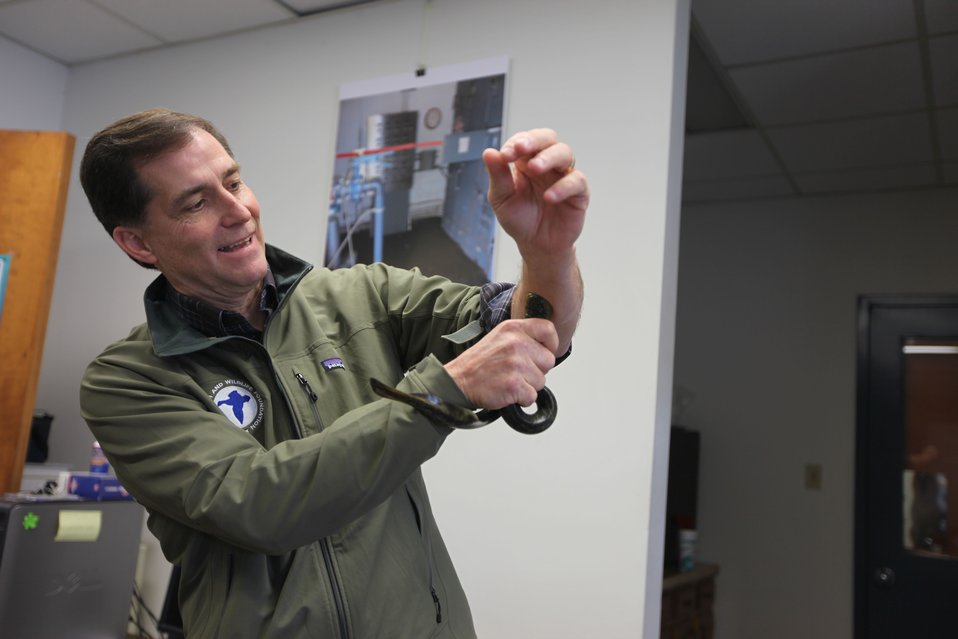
Service Director Dan Ashe with a lamprey attached to his arm!

U.S. Fish & Wildlife Service Director Dan Ashe visits the Northeast Region
for a tour of the White River National Fish Hatchery in Bethel, Vermont on
April 27, 2012. The hatchery was devastated by Tropical Storm Irene and
Dan Ashe had the chance to meet and thank the staff for their heroic work.
Director Ashe also visited restoration/flood response/fish passage project
sites in Rochester, Vermont and met with local officials and staff from the
White River Partnership.